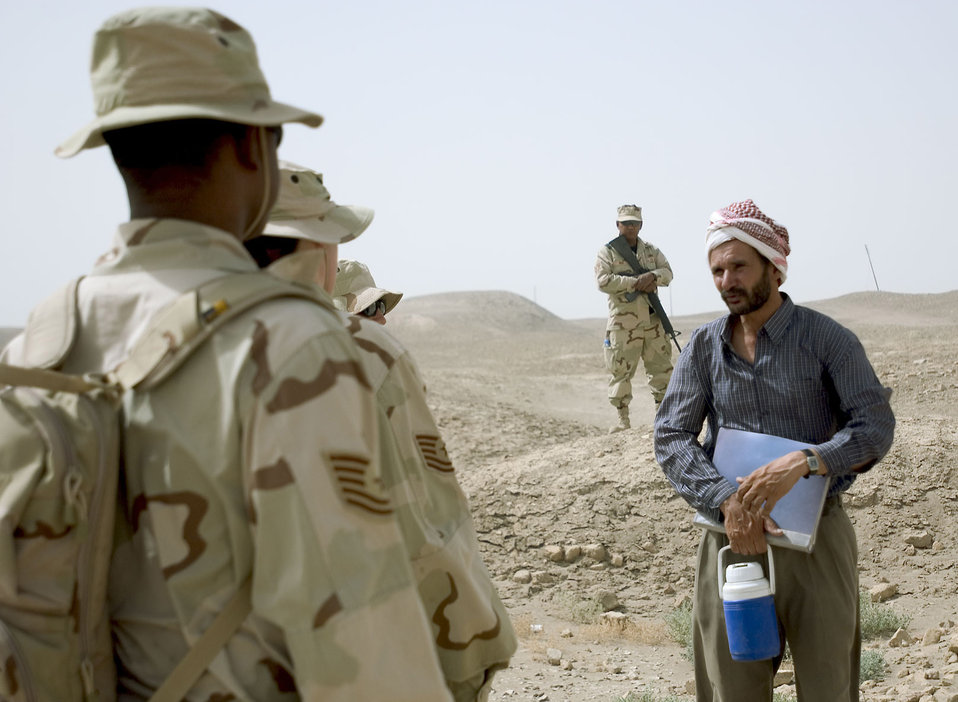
Deployed Airmen give tours to Iraqi historical landmark

ALI BASE, Iraq -- Staff Sgt. Nat Ruiz (background) provides security for Airmen on a recent visit to the ziggurat of Ur. Dhaif, the site's caretaker and tour guide, talks about the history of the 4,000-year-old monument. Sergeant Ruiz is assigned to the 407th Expeditionary Services Squadron and is deployed from Laughlin Air Force Base, Texas.